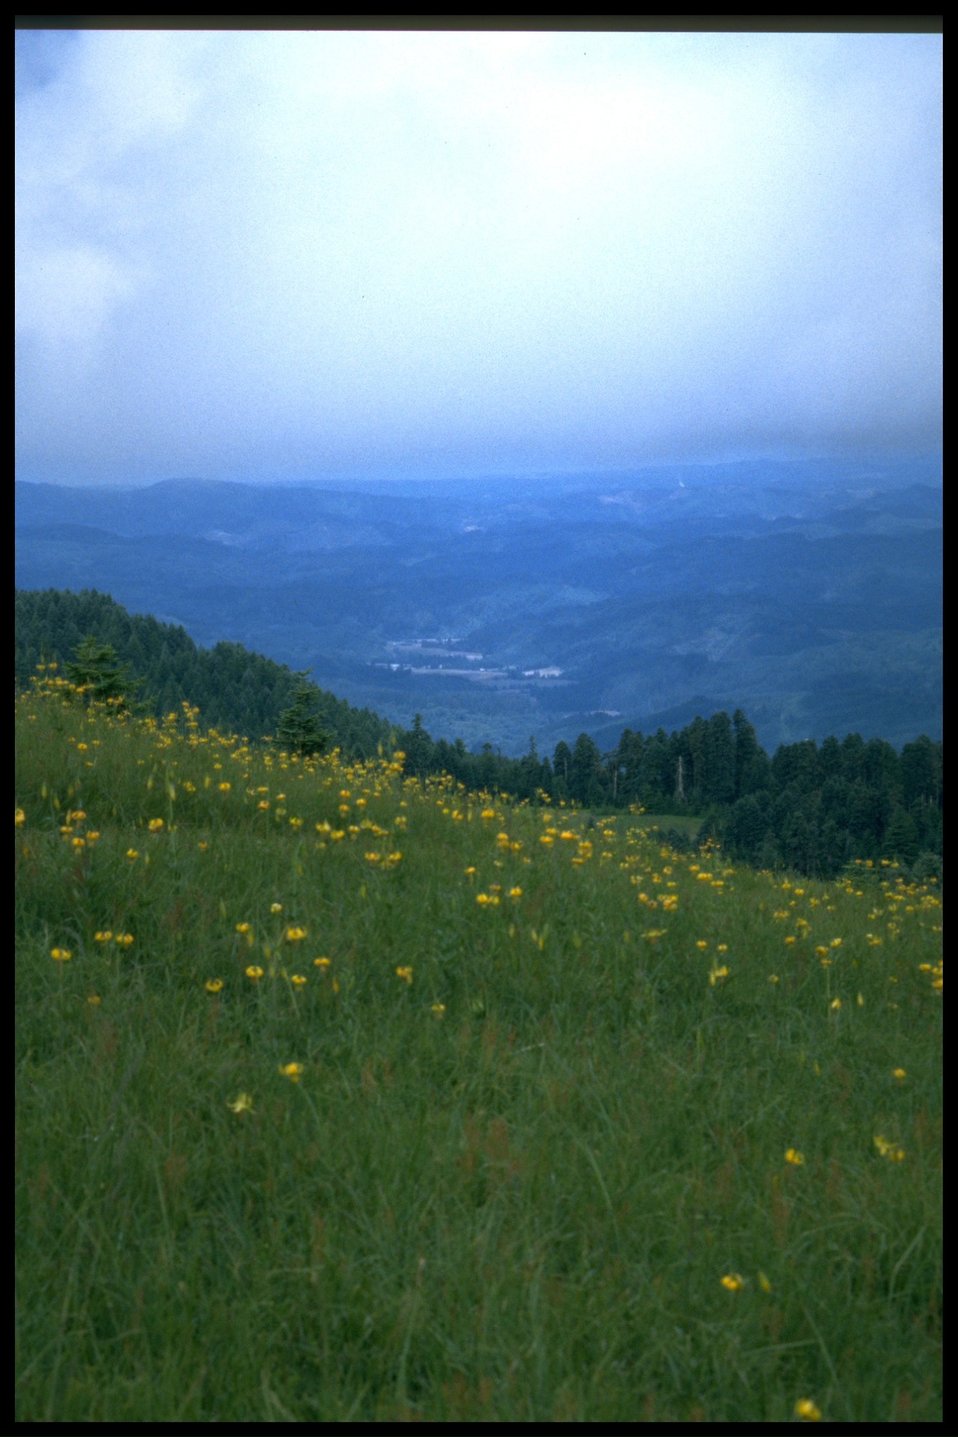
Meadow, wildflowers, scenic view from Mary's Peak.